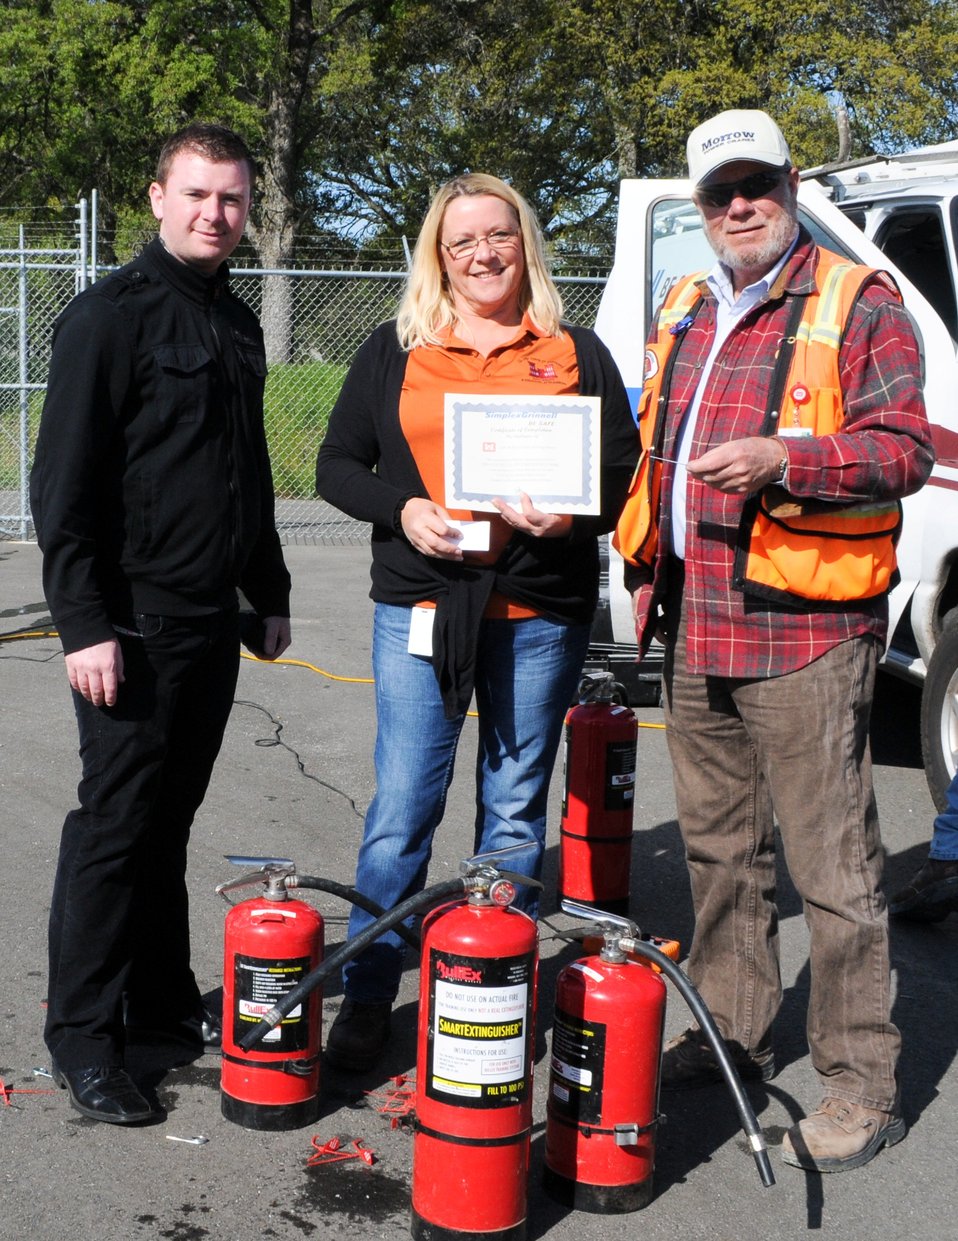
Sacramento District safety team in Folsom, Calif.

(From left) Jason Walsh and Sue Fox, safety specialists; and Dan Williams, safety officer from the U.S. Army Corps of Engineers Sacramento District, prepare to award certificates of completion for the yearly fire extinguisher safety training in Folsom, Calif., April 7, 2012. The training, mandated by Occupational Safety and Health Administration and conducted by the district’s safety office, included a video presentation, group discussion, followed by a timed live-fire exercise.